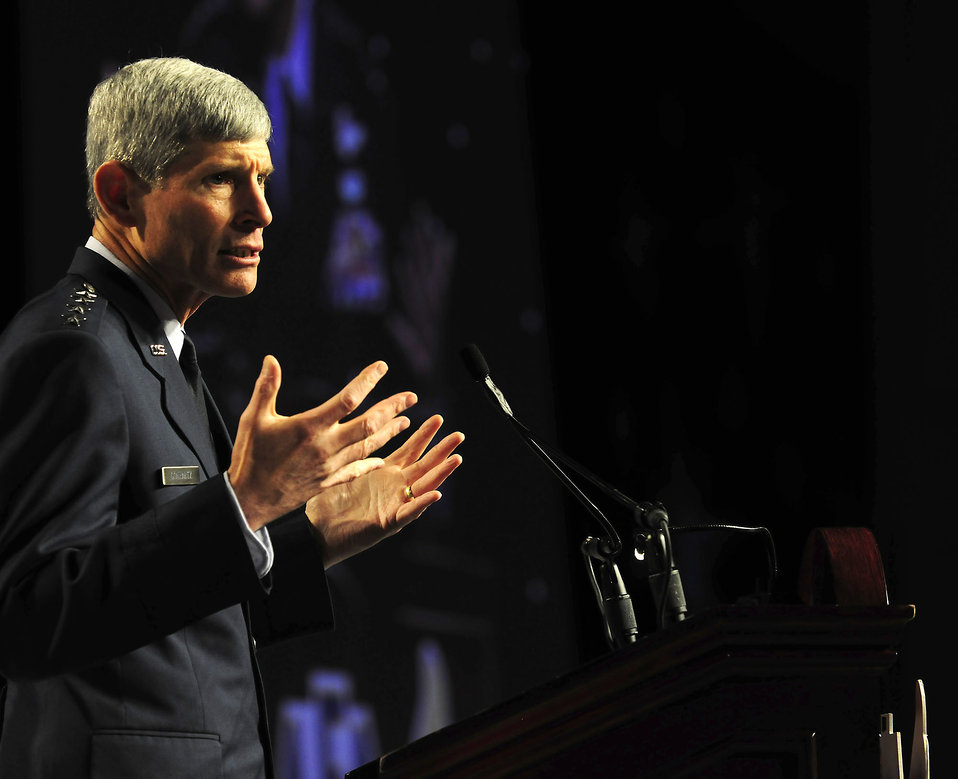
Chief of staff highlights contributions

Air Force Chief of Staff Gen. Norton Schwartz gives his keynote address Sept. 14, 2010, during the Air Force Association 2010 Air and Space Conference and Technology Exposition at National Harbor in Oxon Hill, Md. General Schwartz discussed the role of the Air Force in the 21st century strategic environment.